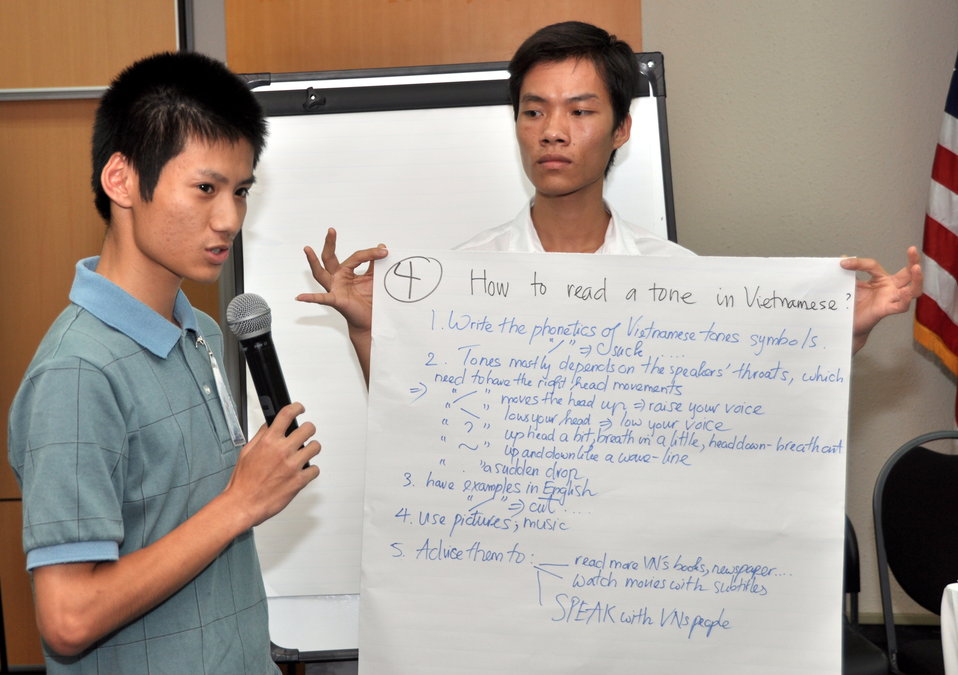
Students join the ‘USAID and Higher Education in Vietnam’ talk

Photo: @USAIDVietnam, November 19, 2012